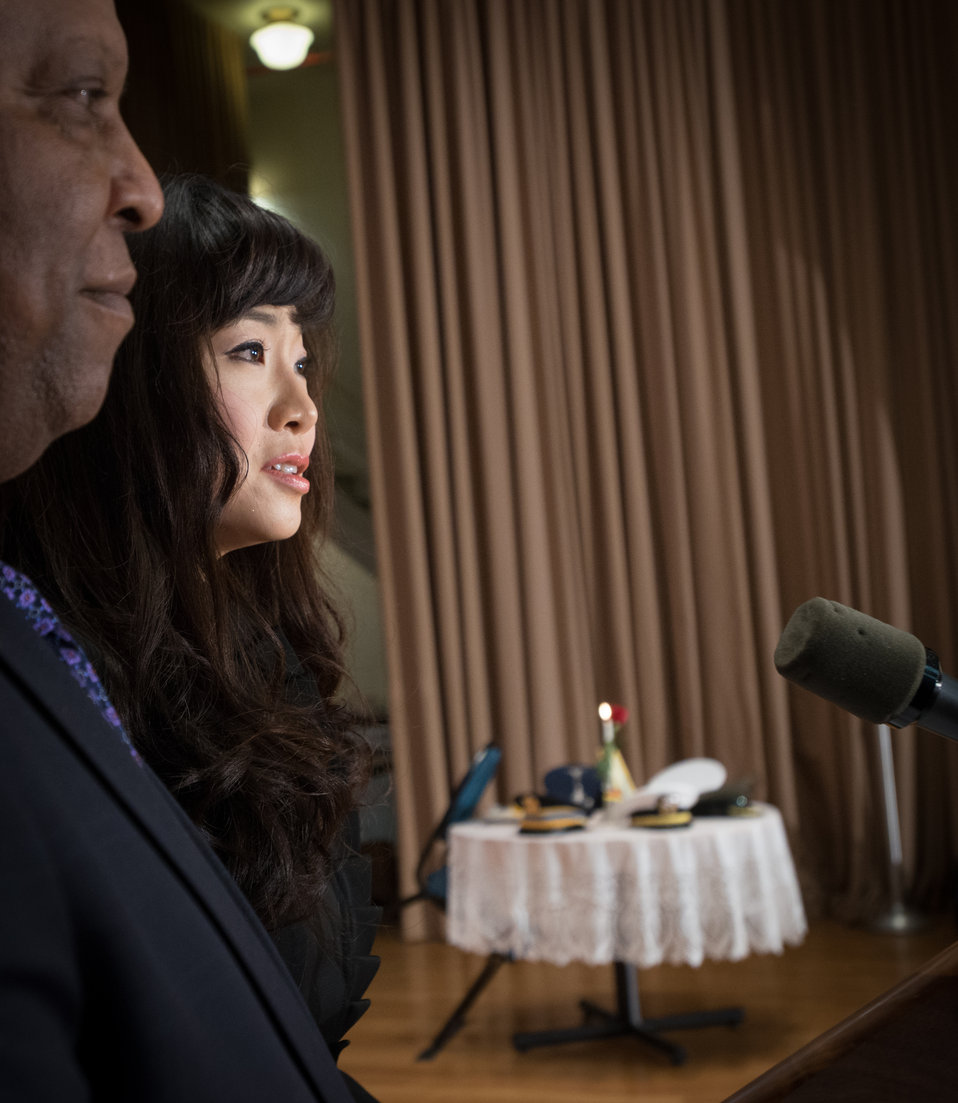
U.S. Department of Agriculture (USDA) Agricultural Marketing Service (AMS) Livestock, Poultry and Seed Division Associate Deputy Administrator and U.S. Marine Corps Lieutenant Colonel (retired) Douglas Keeler, left, moderates, and Soprano Amy Keesun Kwon sings the major Service songs of each of the Armed Services as U.S. Department of Agriculture (USDA) personnel who have served, or are serving in a Uniformed Armed Service are called by their Service to stand and be honored, during the 2013 USDA Veterans’ Day Observance, whose theme is “VALOR, COURAGE, SACRIFICE – HONORING ALL WHO SERVED,” in Washington, D.C., on Wednesday, November 20, 2013.